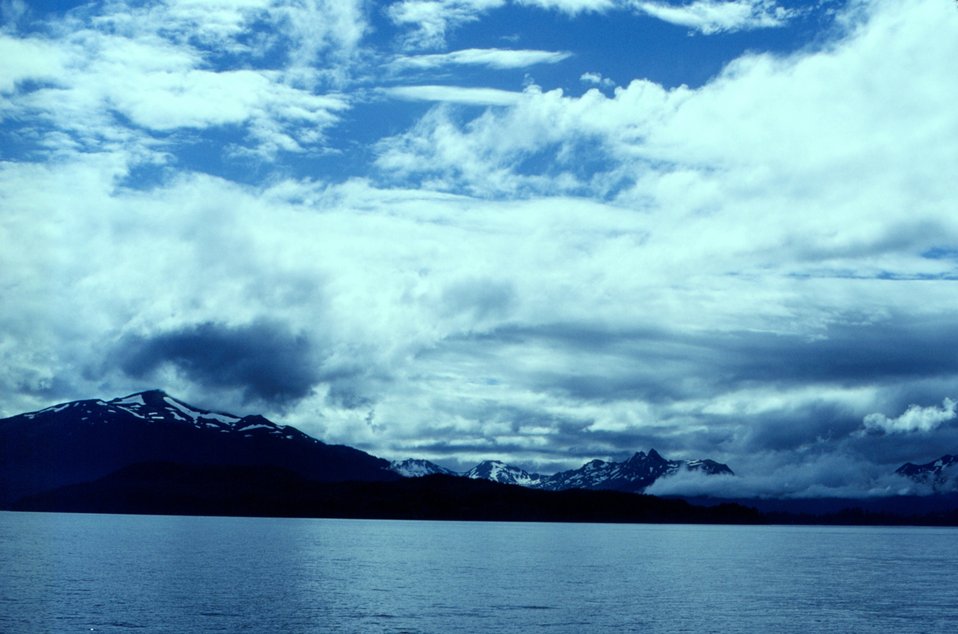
A view along the southern Alaska Peninsula.